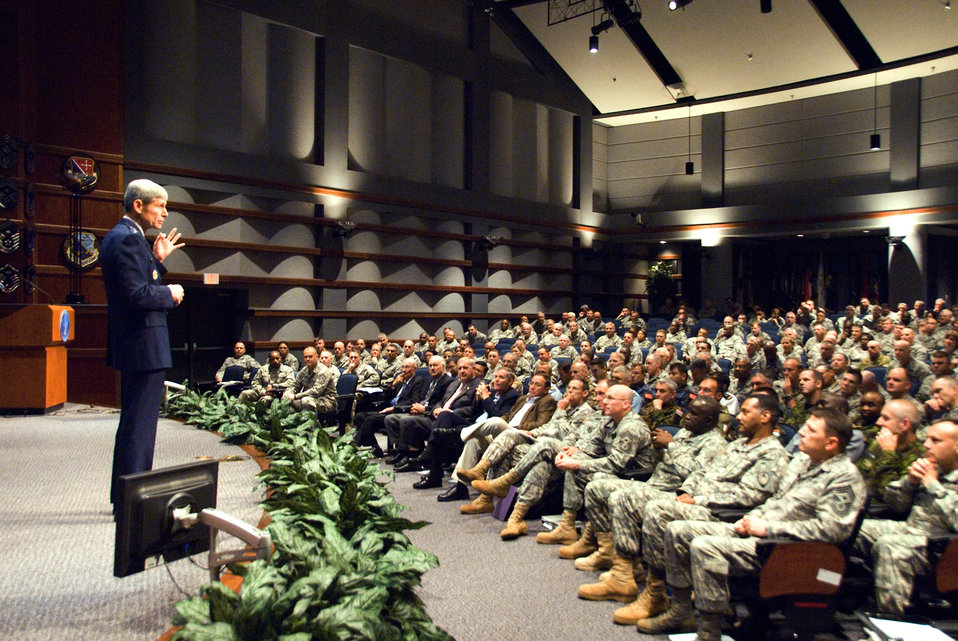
2010 Senior Enlisted Leaders Summit

Air Force Chief of Staff Gen. Norton Schwartz addresses attendees at the Senior Enlisted Leaders Summit at Maxwell Air Force Base, Ala., May 4, 2010 The general encouraged the leaders in attendance to 'deliberately develop' their Airmen. Hosted by Chief Master Sergeant of the Air Force James Roy, the summit brought together approximately 375 Air Force, joint and coalition senior enlisted representatives.